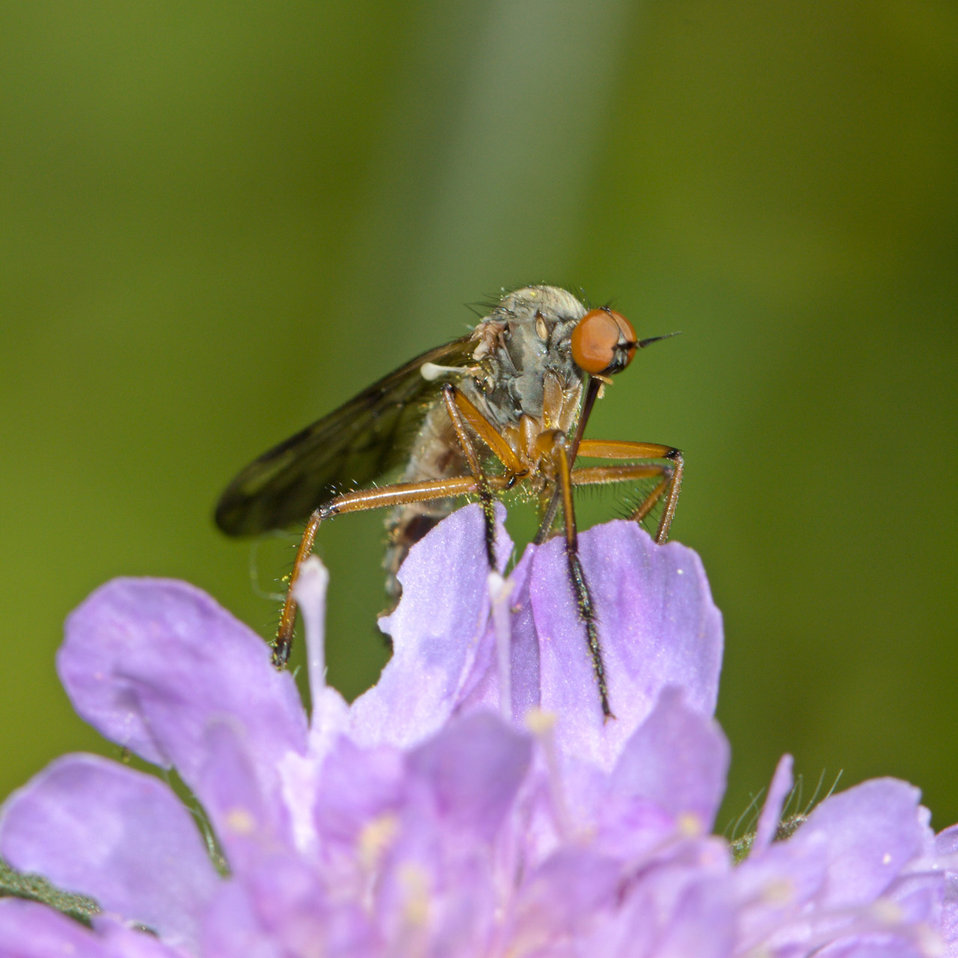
Fly on rose

Fly are resting on rose.